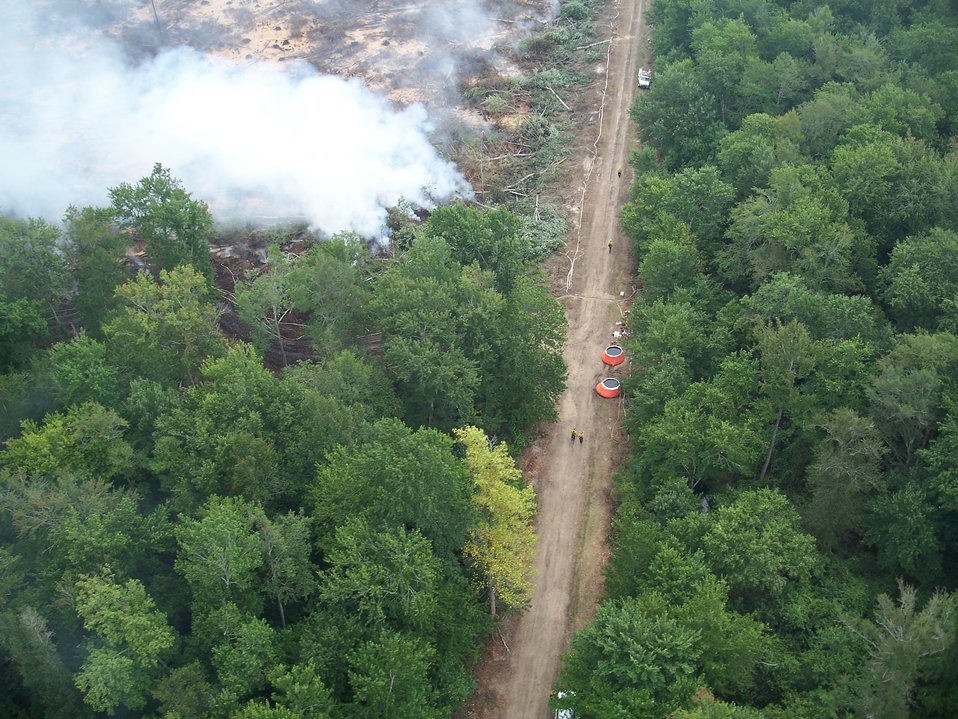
Portable pumpkins

Suffolk, VA, August 2011: Temporary water holding pools know as pumpkins site along a dich road at the Lateral West Fire burning on Great Dismal Swamp National Wildlife Refuge.